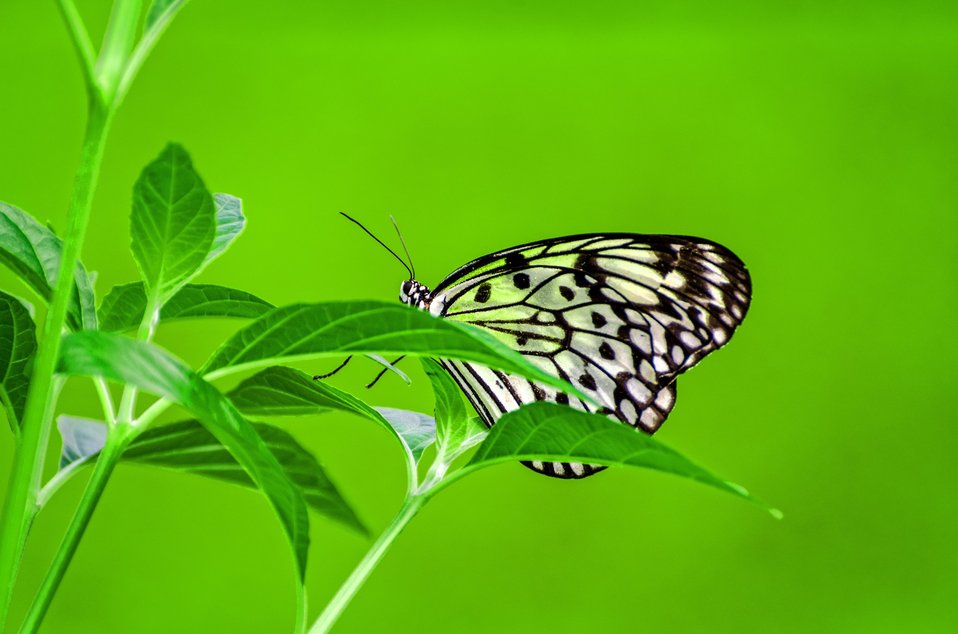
Butterfly on the green plant.